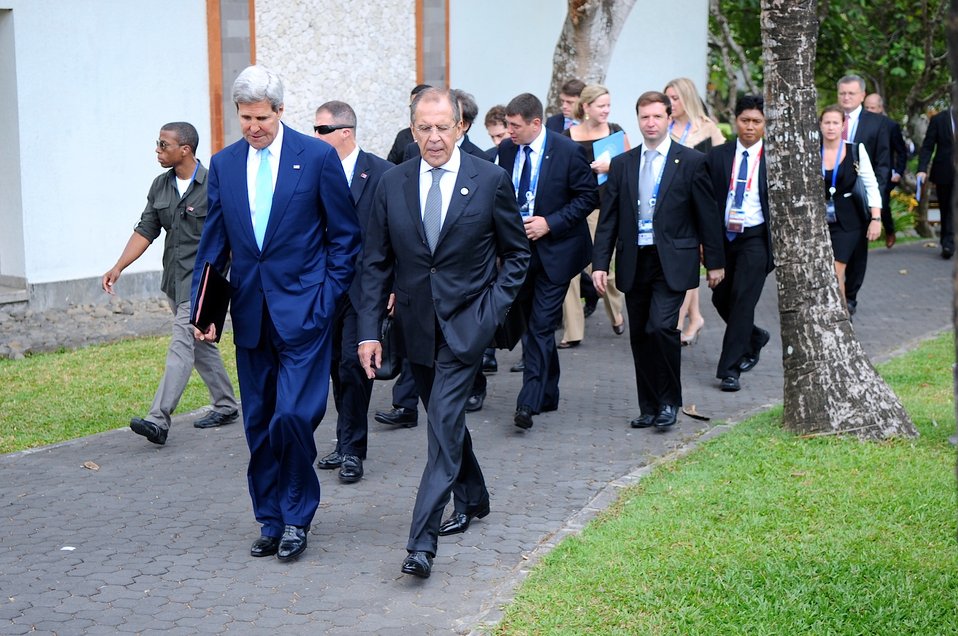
Secretary Kerry and Russian Foreign Minister Lavrov Attend APEC Meetings in Indonesia

U.S. Secretary of State John Kerry and Russian Foreign Minister Sergey Lavrov walk together at the APEC Leaders meeting in Bali, Indonesia, October 7, 2013.